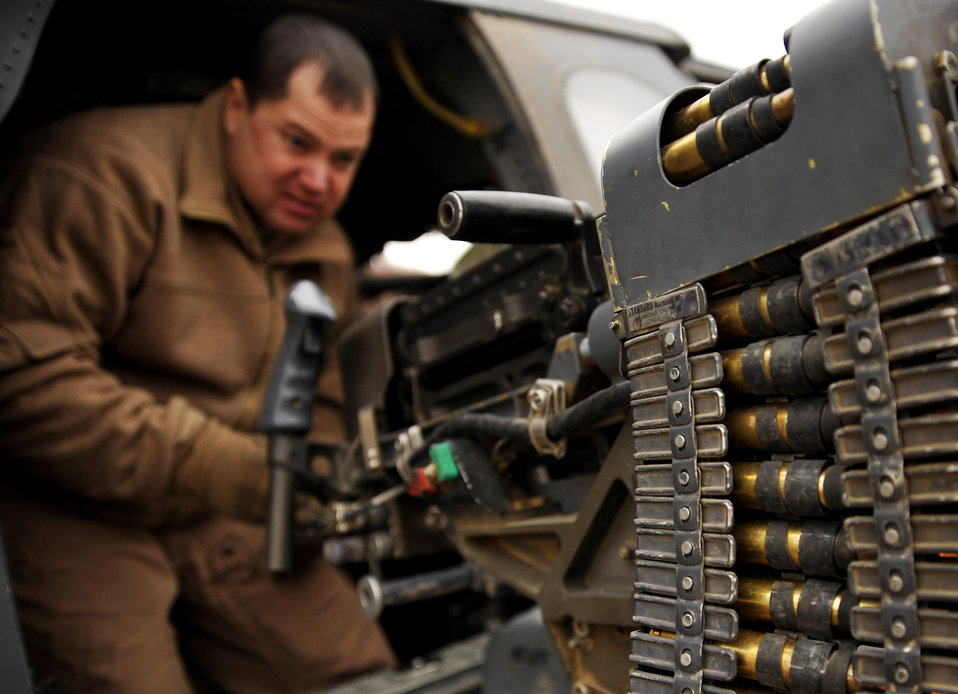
Master Sgt. Don Ballowe inspects his 50-caliber machine gun

U.S. Air Force Master Sgt. Don Ballowe, 66th Expeditionary Rescue Squadron flight engineer, deployed to Camp Bastion, Afghanistan, inspects his 50-caliber machine gun, Dec. 8, 2009. While the crew pre-loads the aircraft, they also inspect their equipment to ensure it is properly working before a rescue mission.